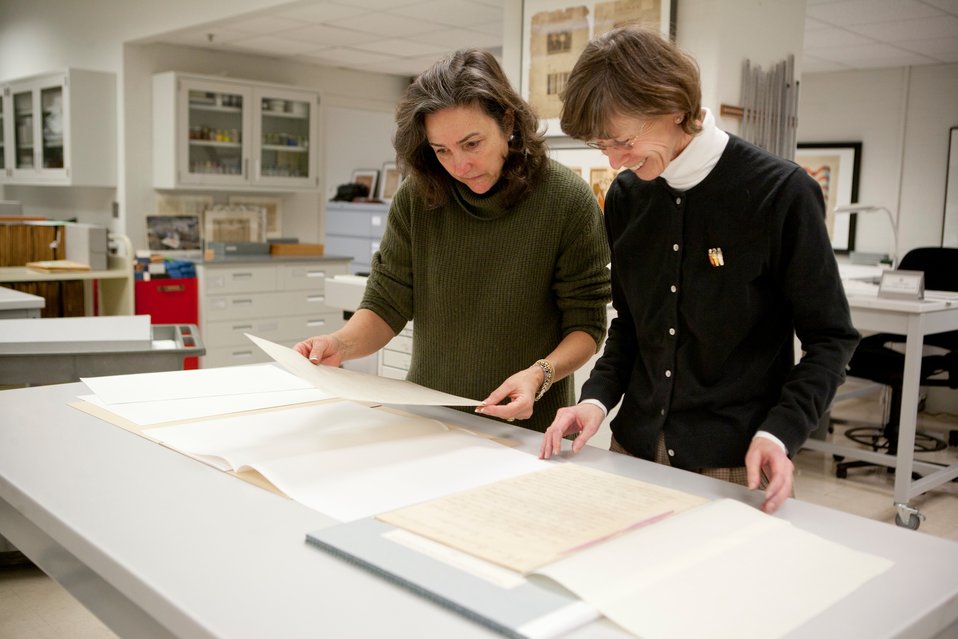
Terry Boone and Jane Fitzgerald are reviewing the Preliminary Emancipation Proclamation; Location: Archives 1 - Conservation Lab, Washington, D.C.